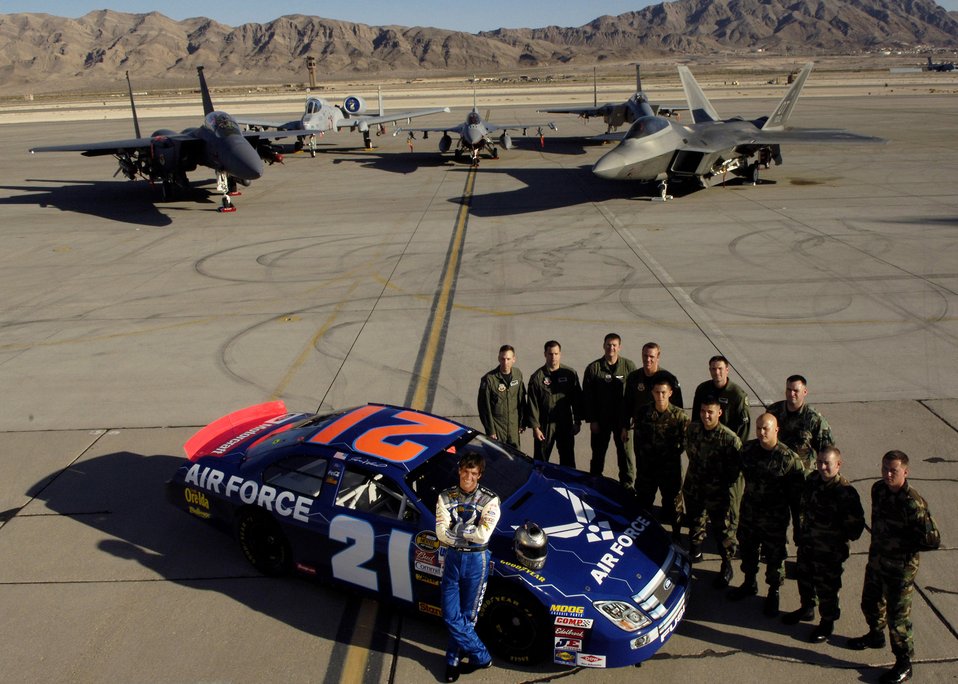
Air Force Racing

Jon Wood, driver of the Air Force car, poses for photos with Airmen on the flightline at Nellis Air Force Base, Nev., March 8. Wood is at Nellis visiting Airmen before his NASCAR Nextel Cup UAW Daimler-Chrysler 400 race March 10.